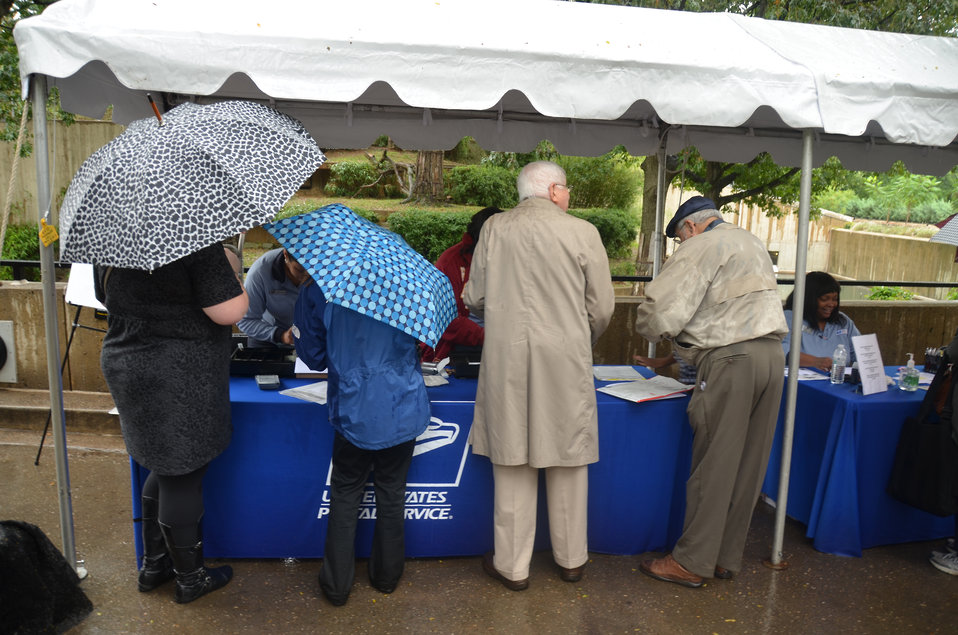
Save Vanishing Species Stamp First Day of Issue